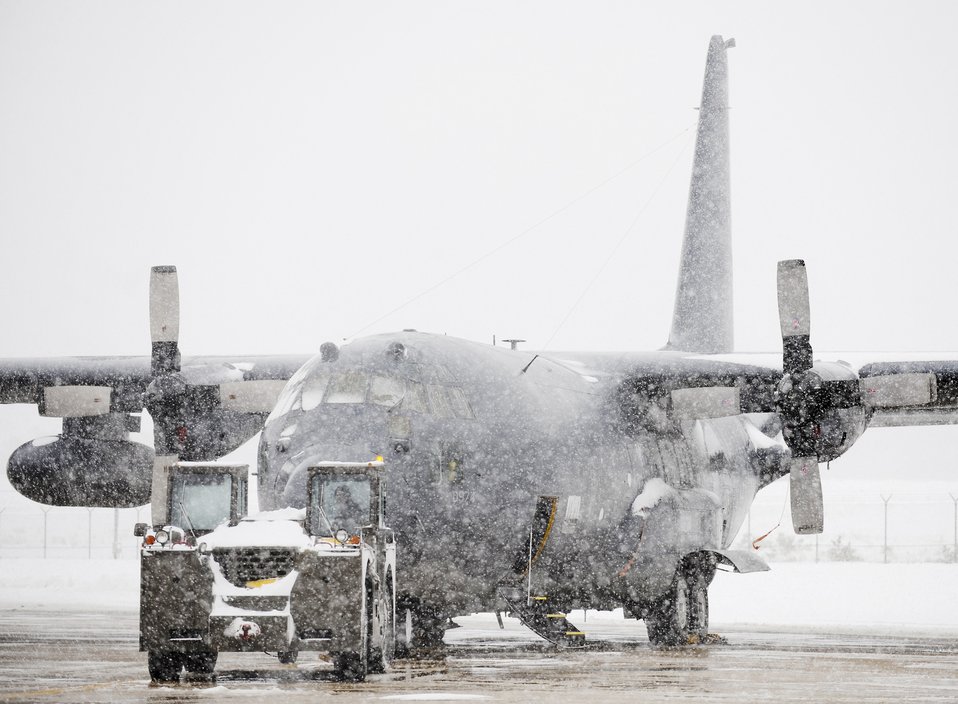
New York maintainers secure aircraft

Airmen with the 106th Aircraft Maintenance Squadron work to secure a HC-130 Hercules Feb. 26, 2010 during a snowstorm at New York National Guard's 106th Rescue Wing at Francis S. Gabreski Airport in Westhampton Beach, N.Y.